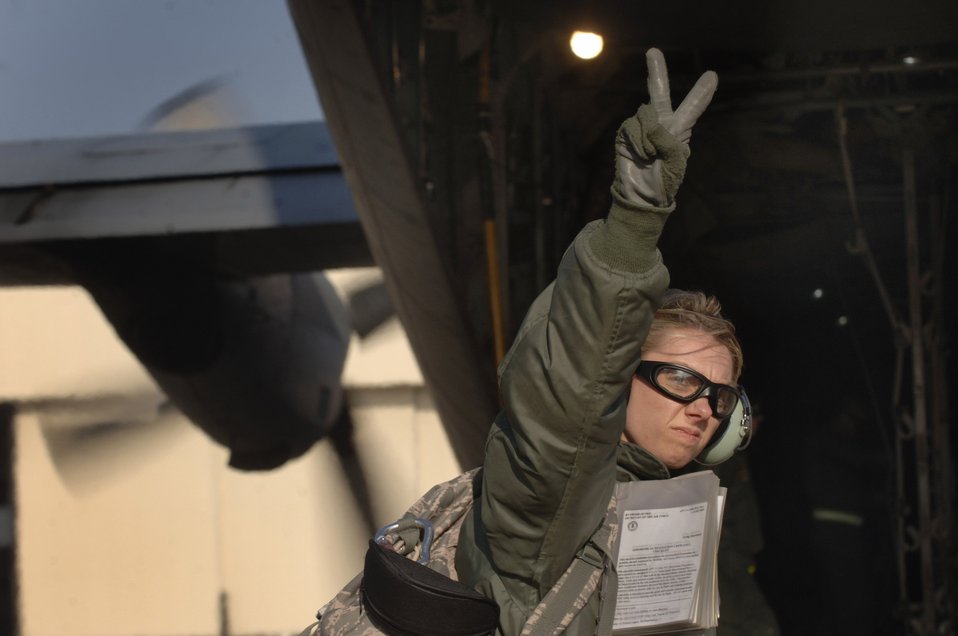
Medical professionals hone patient care skills

Capt. Stephanie Ellenburg signals the number of Airmen needed for the next off load following a three-hour aeromedical evacuation training sortie Feb. 19 at Ramstein Air Base, Germany. Captain Ellenburg, a flight nurse, was serving as a safety spotter for an engines-running off load of medical equipment and personnel.